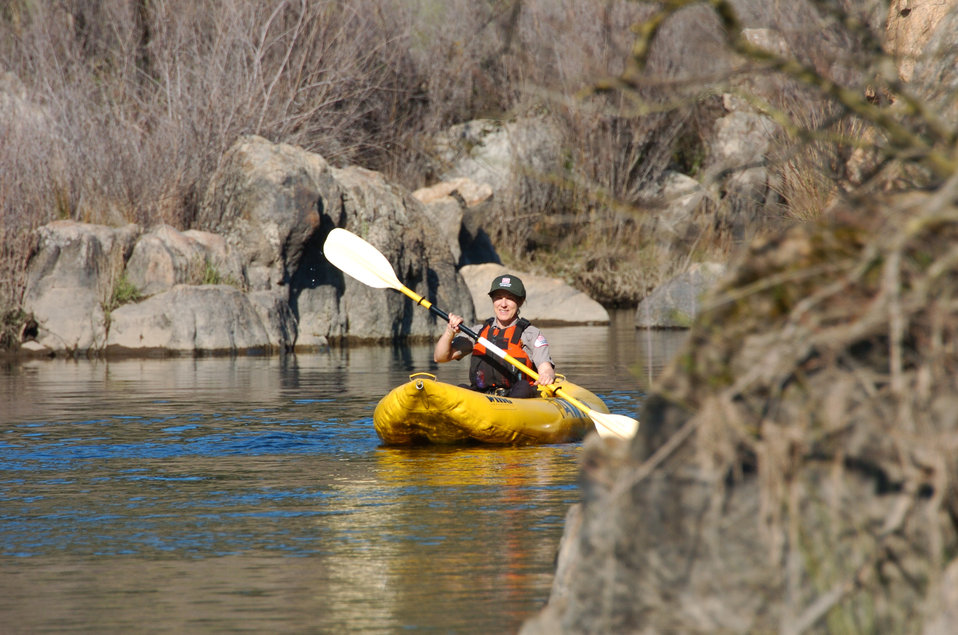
STANISLAUS RIVER PARKS, Calif. (Feb. 23, 2011) - U.S. Army Corps of Engineers Sacramento District park ranger Heather Wright patrols the Stanislaus River in her kayak. Stanislaus River Parks is just one of 423 lakes and river projects managed by the Corps nationwide.